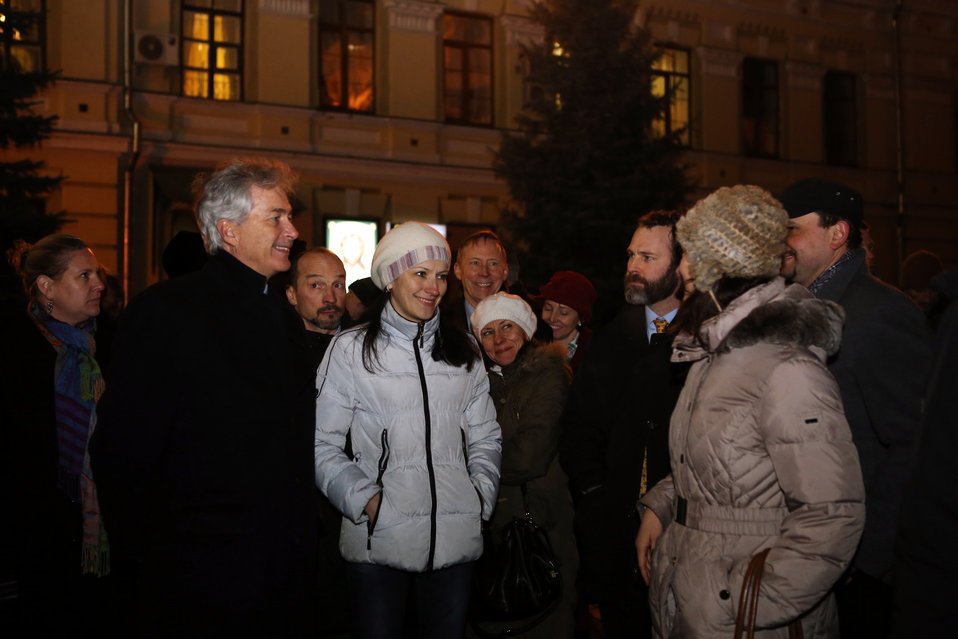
Deputy Secretary Burns Meets With Ukrainian Civil Society

Deputy Secretary of State Bill Burns meets with members of civil society in Kyiv, Ukraine, on February 25, 2014.